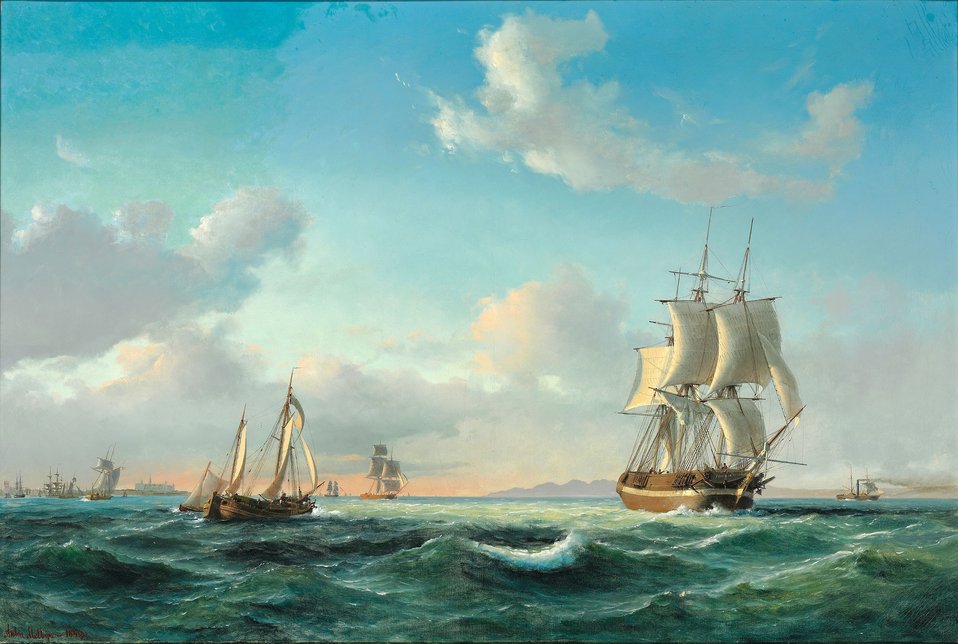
Anton Melbye - Sejlskibet ‚Johanna‘ og andre fartøjer i Sundet ud for Kronborg Slot